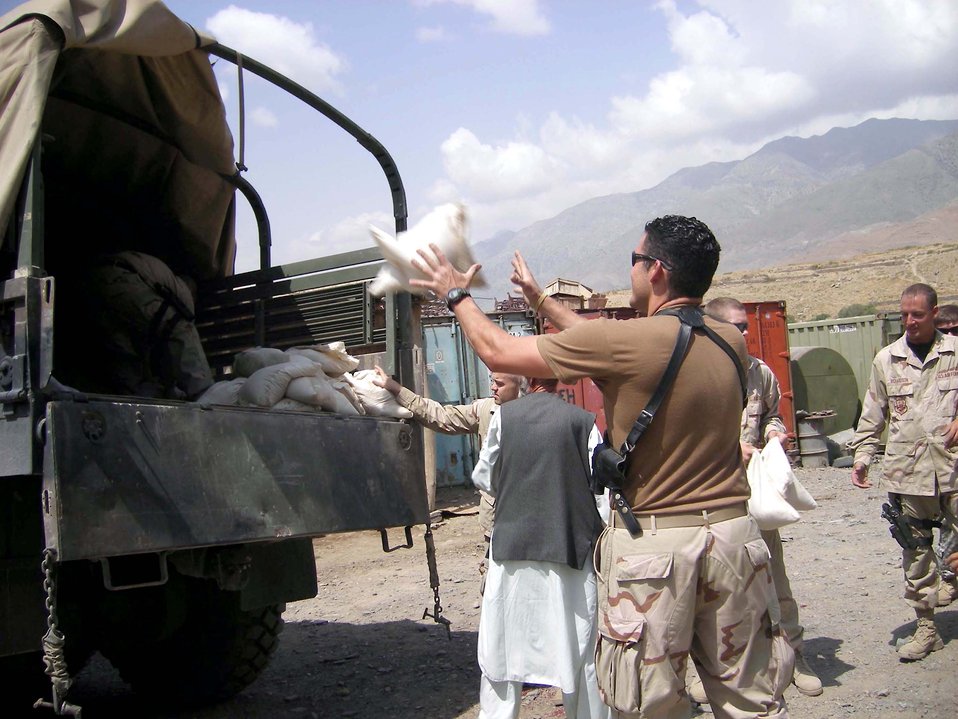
Humanitarian assistance

Senior Airman Dennis Martinez catches a bag of dried beans as members of the Panjshir Provincial Reconstruction Team unload a 5-ton truckload of humanitarian assistance food near Abdara , Afghanistan, on July 30. Airman Martinez is deployed from Tinker Air Force Base, Okla.